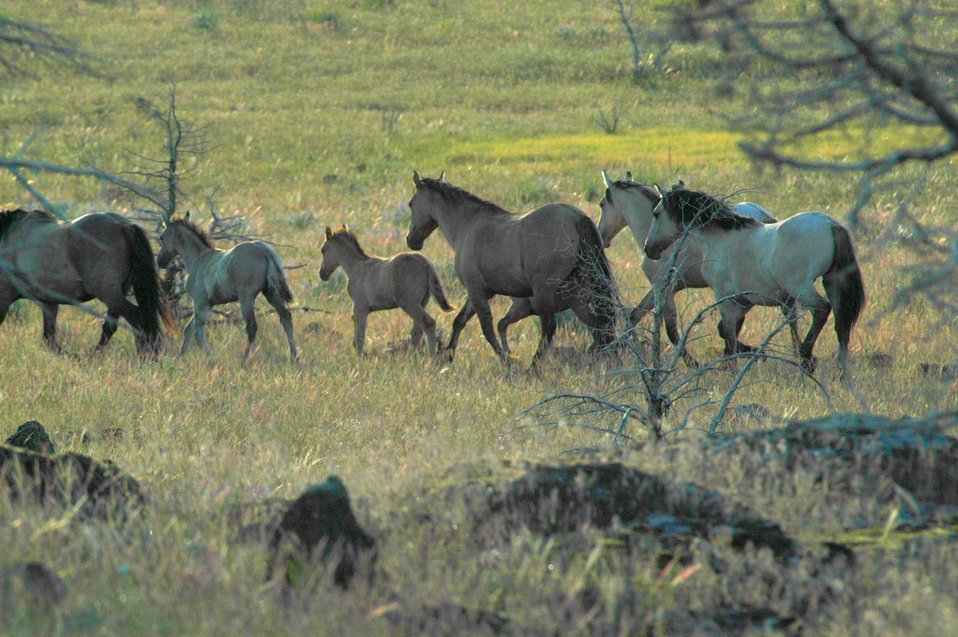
Kiger horses roam the plateaus of the Kiger Wildhorse Herd Management Area near Steens Mountain in Southeastern Oregon.